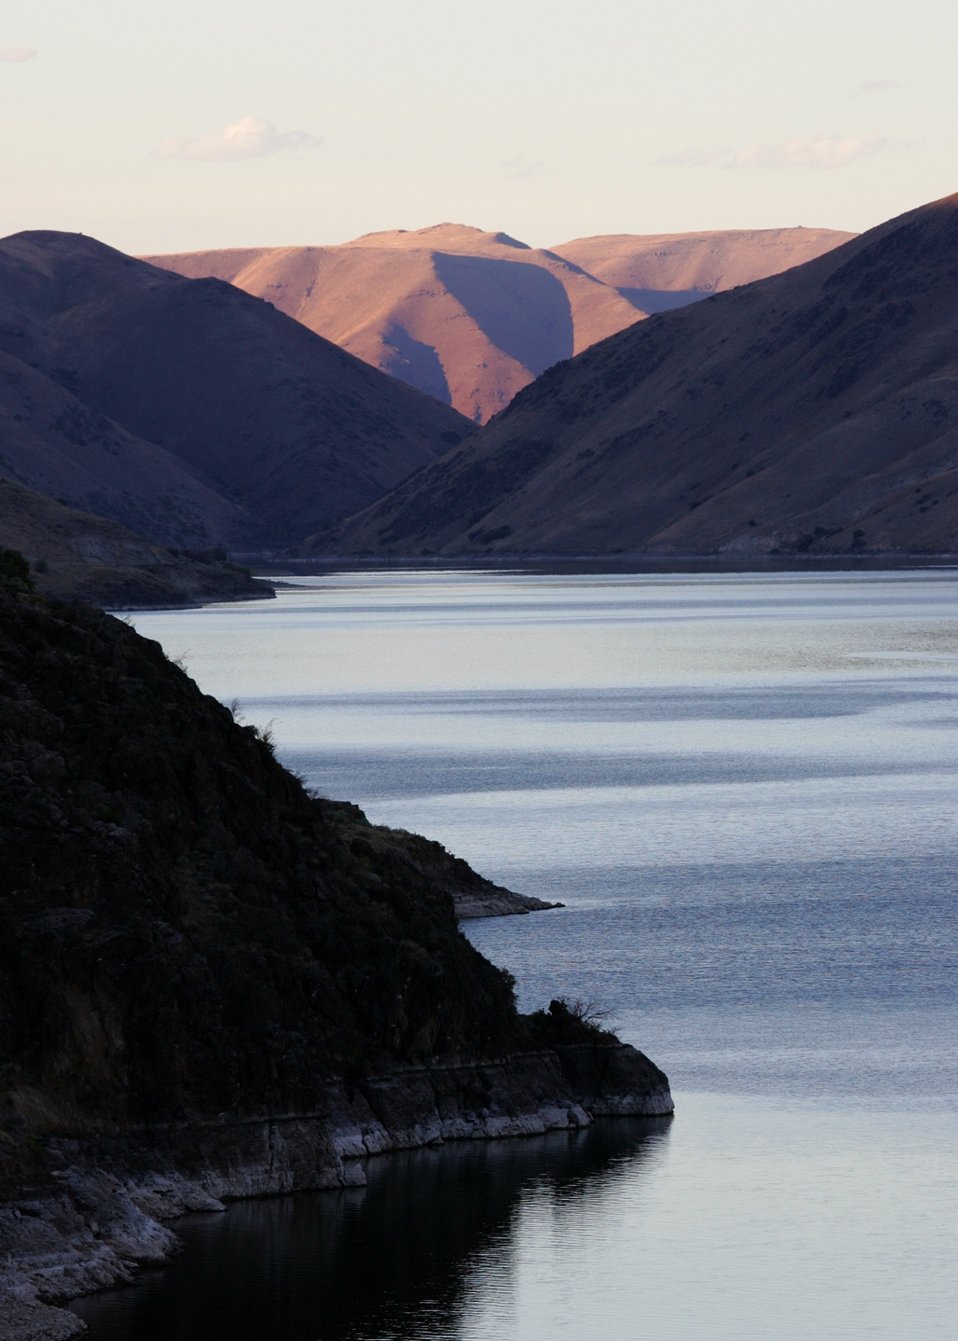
Snake River Backcountry Byway